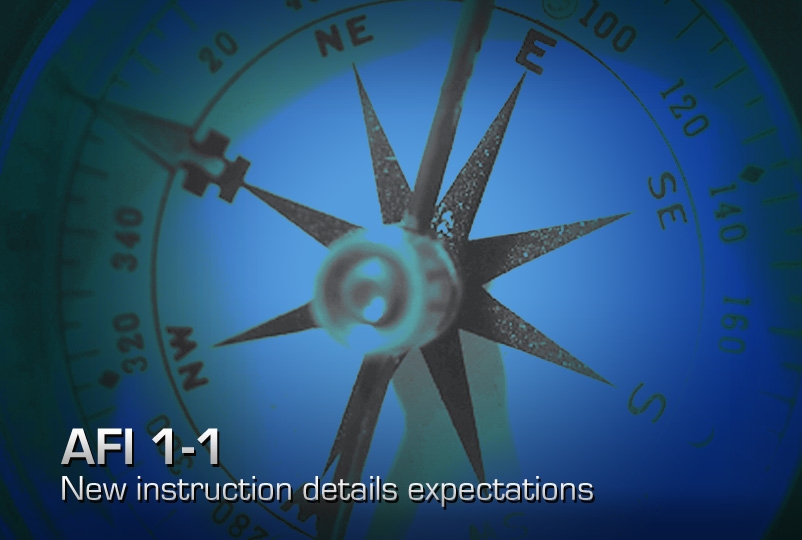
New instruction puts spotlight on standards, culture

Air Force Instruction 1-1, Air Force Standards, was signed and certified recently. In a single document, the instruction conveniently summarizes the expected standards of conduct for uniformed Airmen.